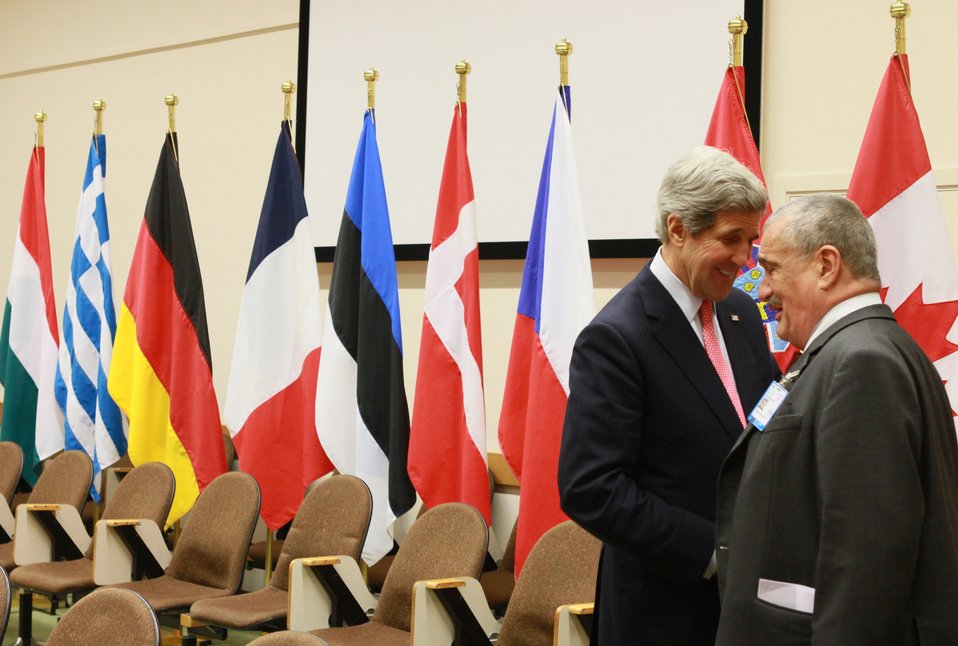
Secretary Kerry Meets With Czech Foreign Minister Schwarzenberg

U.S. Secretary of State John Kerry meets with Czech Foreign Minister Karel Schwarzenberg at the NATO Foreign Ministerial in Brussels, Belgium, on April 23, 2013.